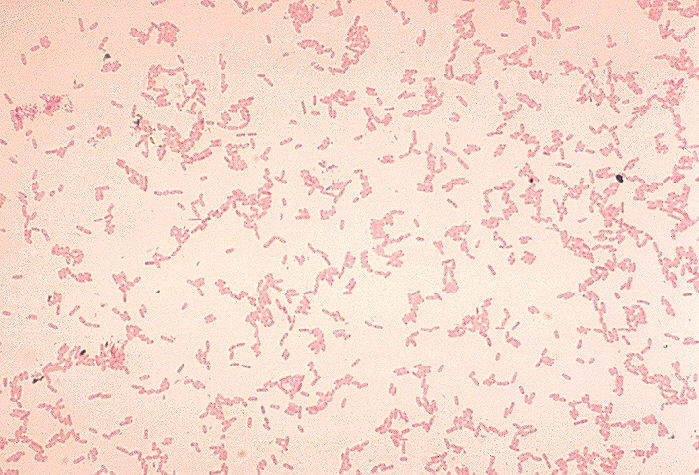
Achromobacter xylosoxidans. Gram stain.